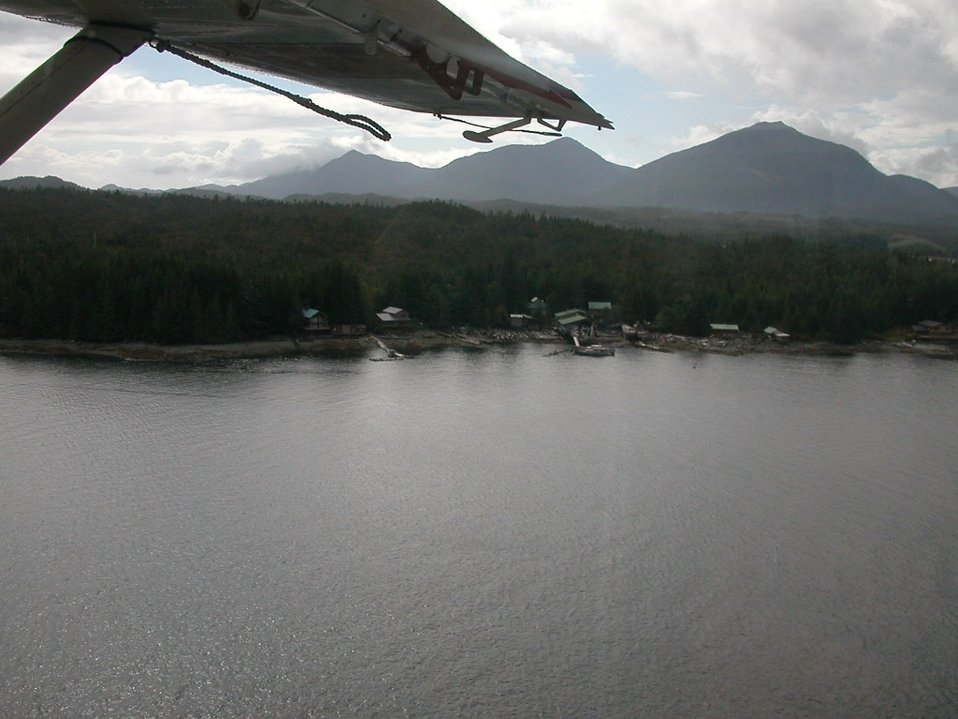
Float plane tourist ride out of Ketchikan.